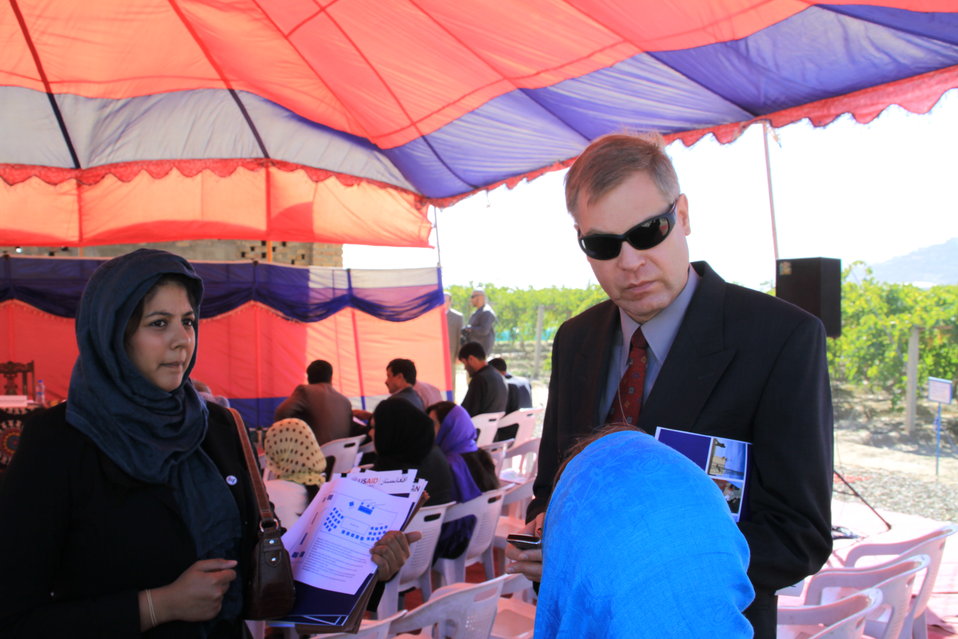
AVIPA Plus Wheat Seed Distribution 101005

US Ambassador Karl Eikenberry and USAID Acting Mission Director Kevin Brownawell joined the Minister of Agriculture, Irrigation and Livestock, H.E. Minister Mohammed Rahimi in signing a Memorandum of Understanding and distributing vouchers to area farmers for wheat and fertilizer.